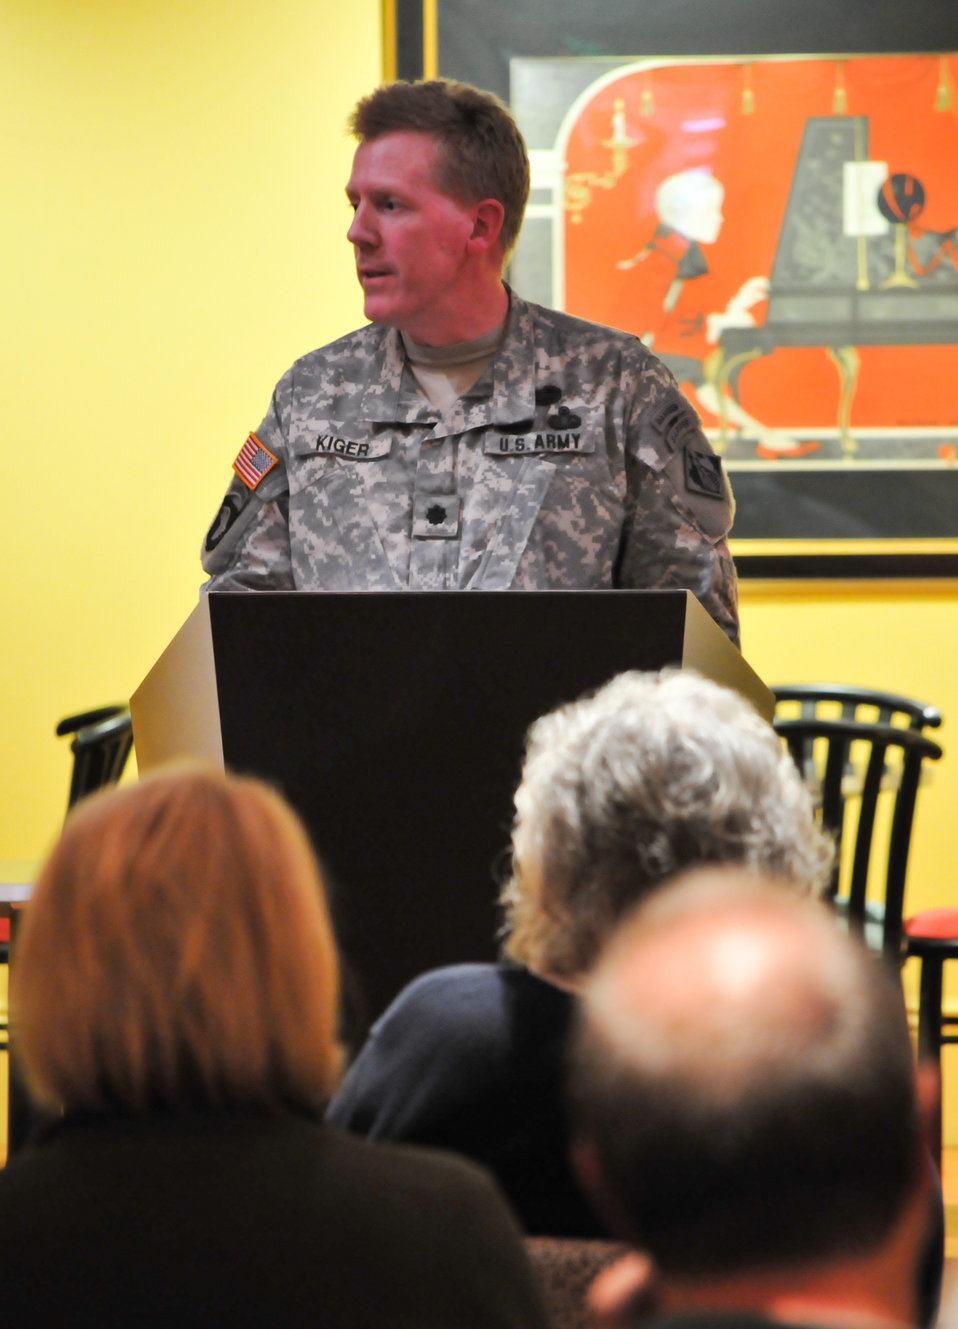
Groundreaking ceremony for the Napa Creek flood risk reduction project

NAPA, Calif. (Oct. 22, 2010) - U.S. Army Corps of Engineers Sacramento District deputy district commander Lt. Col. Andrew Kiger speaks at a groundbreaking ceremony for the Napa Creek flood risk reduction project here Oct. 22. The $14.8 million project, funded by the American Recovery and Reinvestment Act of 2009, is a joint effort of the Corps, the city of Napa, and the Napa Flood Control and Water Conservation District, to reduce flood risk for Napa, Calif.